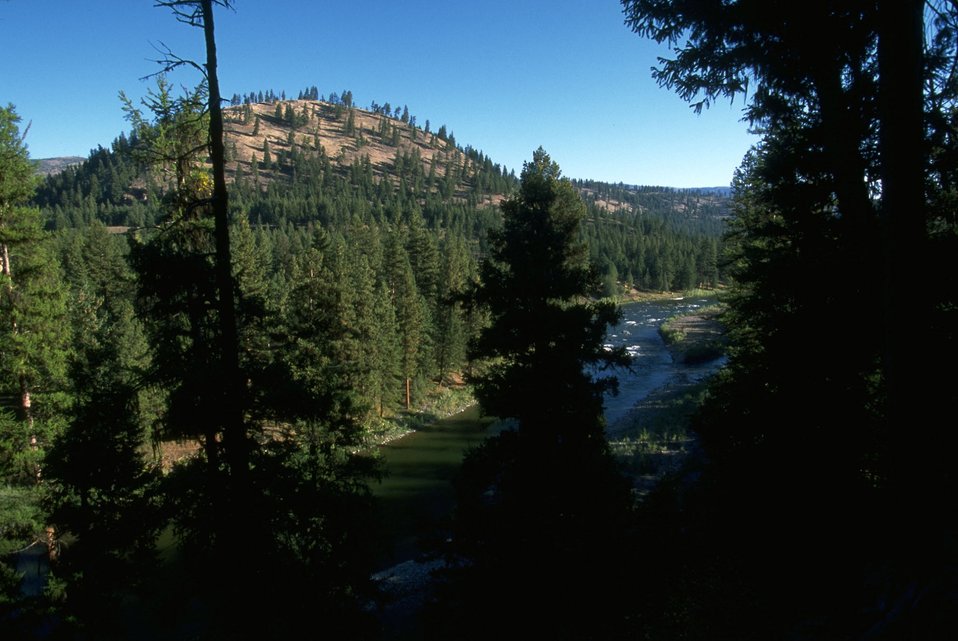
Blackfoot River